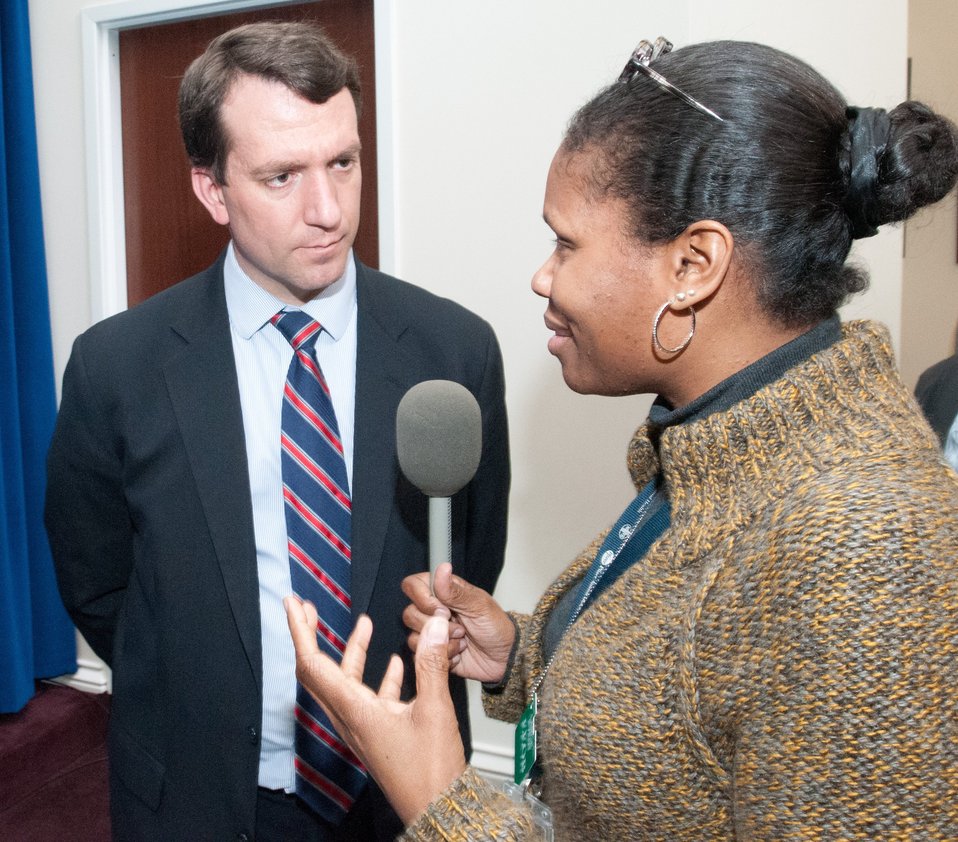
White House Office of Public Engagement Director Jon Carson (left) is interviewed by Agriculture radio broadcaster Susan Carter (right) following a Know Your Farmer COMPASS twitter event at the White House, in Washington, D.C., on Monday, March 5, 2012. The virtual conversation event was a continuation of a National Conversation on Local and Regional Food projects and how they offer economic opportunities to local farmers, ranchers and food entrepreneurs.